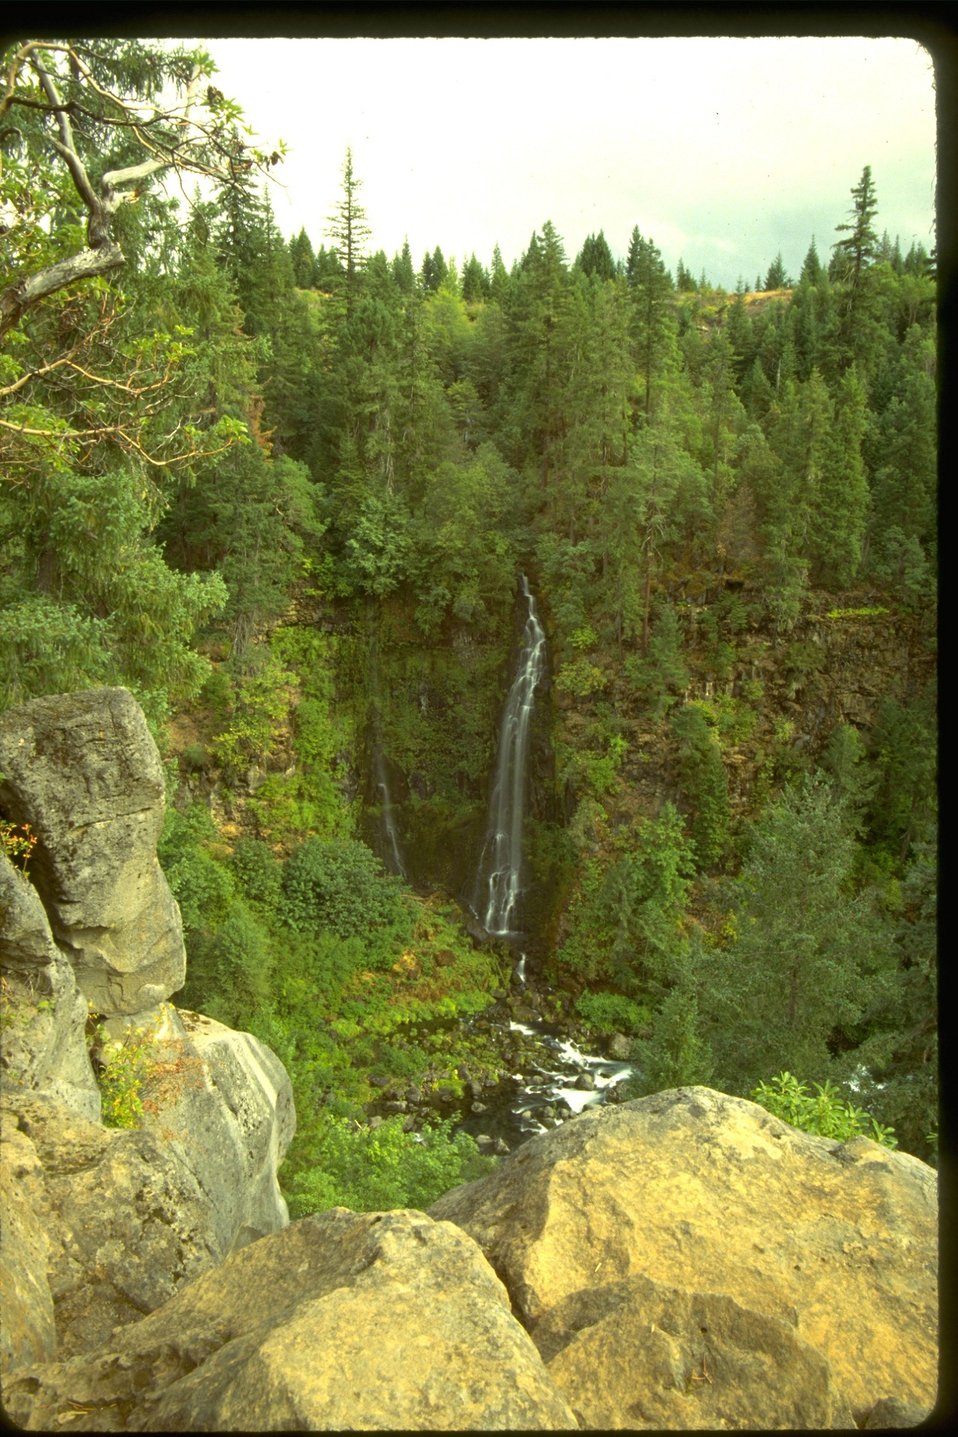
Barr Creek Falls